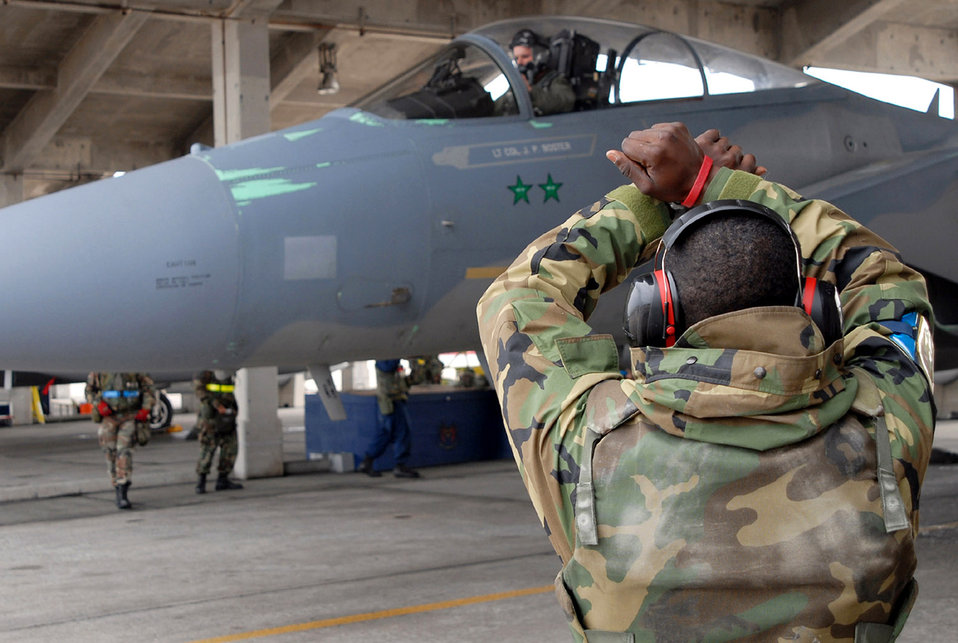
Kadena F-15s returning to flight

Airman 1st Class Lewis McNeal marshals an F-15 Eagle piloted by Capt. Mike Jones during Exercise Beverly High 08-3 Jan. 9 at Kadena Air Base, Japan. Kadena AB F-15s were grounded since November, but 65 percent of the fleet was cleared to resume flight operations. Airman McNeal is assigned to the 18th Aircraft Maintenance Squadron, and Captain Jones is from the 44th Fighter Squadron.